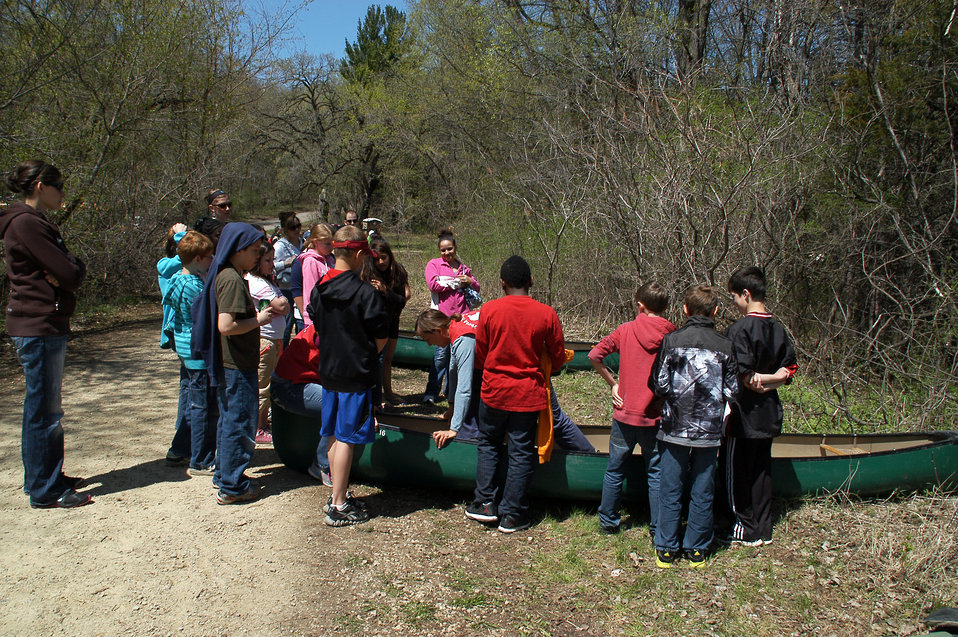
Boat Safety and Don't Rock the Boat

A classroom gathers around MN Valley Bioscience Technician Nicole Menard to learn how to safely enter, sit in, and exit a canoe.